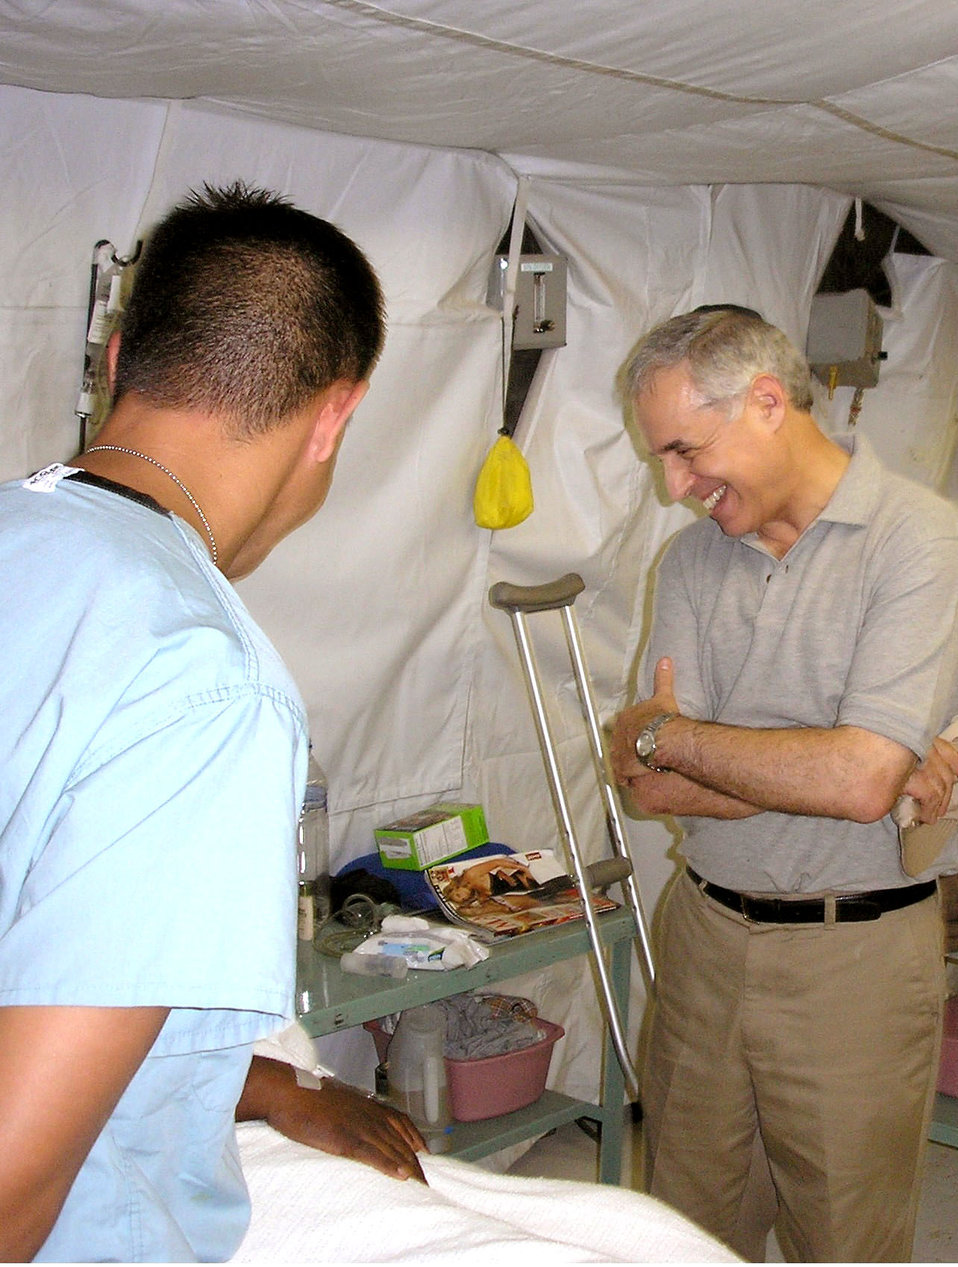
Rabbi uses Iraq trip to help shape AF vision, values

BALAD AIR BASE, Iraq -- Rabbi Arnold E. Resnicoff shares a light moment with a patient during his visit here at the Air Force Theater Hospital.